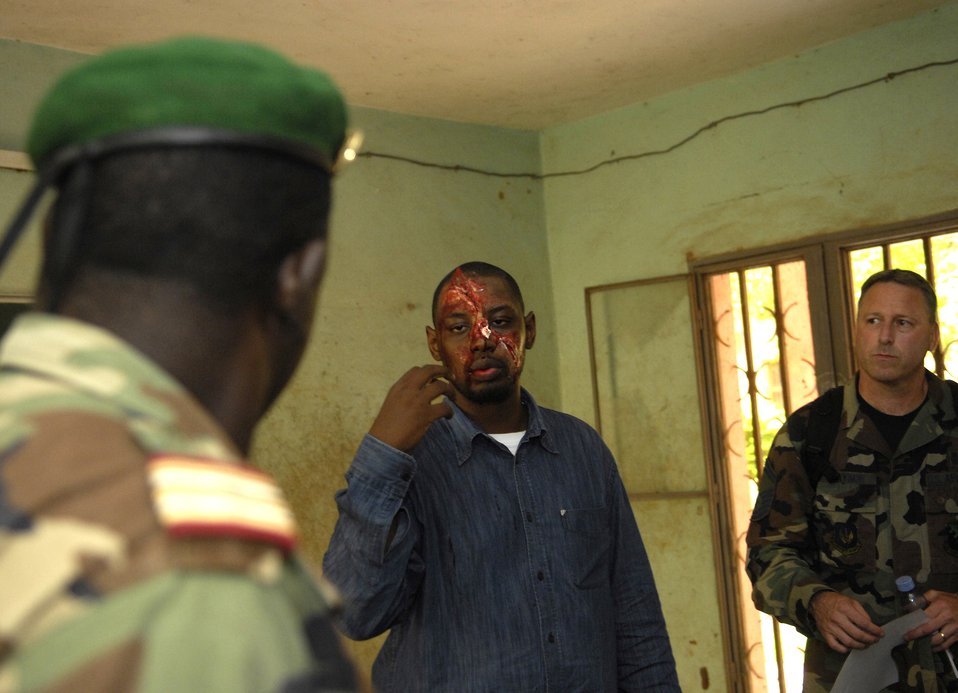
Malians learn life-saving medical techniques

Mohamed Diawara translates for Senior Master Sgt. Robert Traynor while talking to members of the Malian military about the moulage make-up Mr. Diawara is wearing during MEDFLAG 08, July 15. More than 90 servicemembers deployed to Bamako for MEDFLAG 08, a multi-national medical training exercise designed to enhance medical capabilities and readiness for U.S. and African Forces. Sergeant Traynor is deployed from the 31st Medical Group, Aviano Air Base, Italy.